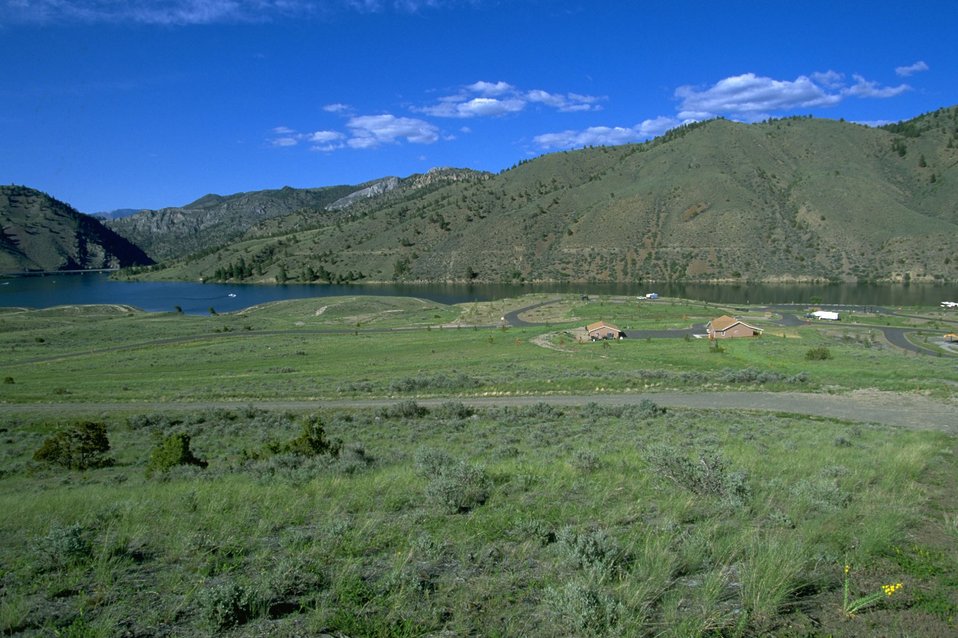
View from the hillside of Devils Elbow Campground by Hauser Lake